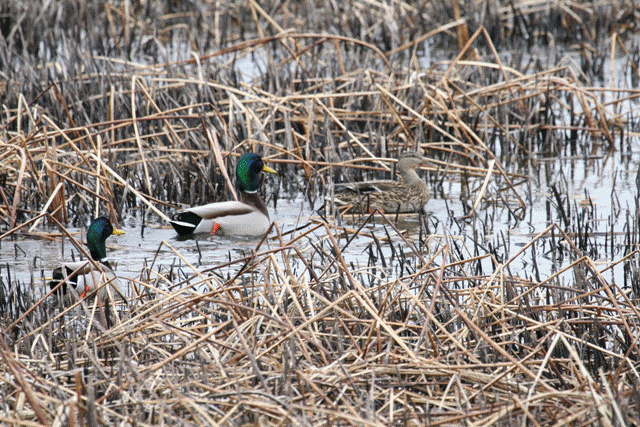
Mallards Swimming